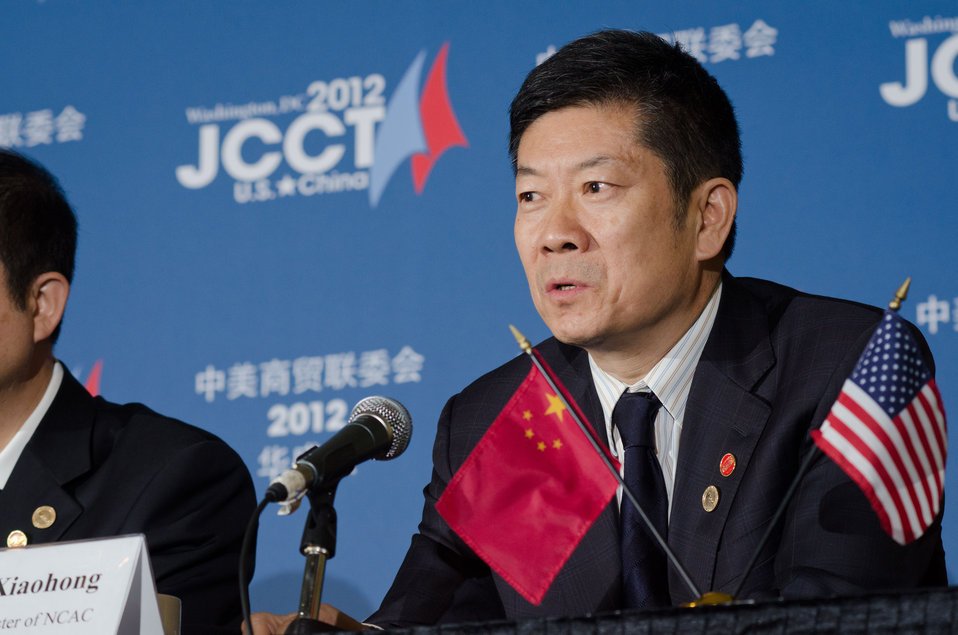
China’s Vice Minister of National Copyright Administration of China (NCAC) Yan Xiaohong answers questions from international news media journalists at the 23rd Session of the U.S. China Joint Commission on Commerce and Trade (JCCT) press conference at the Andrew W. Mellon Auditorium in Washington, D.C. on Wednesday, Dec. 19, 2012. The JCCT holds high-level plenary meetings on an annual basis to review progress made by working groups that focus on a wide variety of trade issues. These working groups meet throughout the year to address topics such as intellectual property rights, agriculture, pharmaceuticals and medical devices, information technology, tourism, commercial law, environment, and statistics.